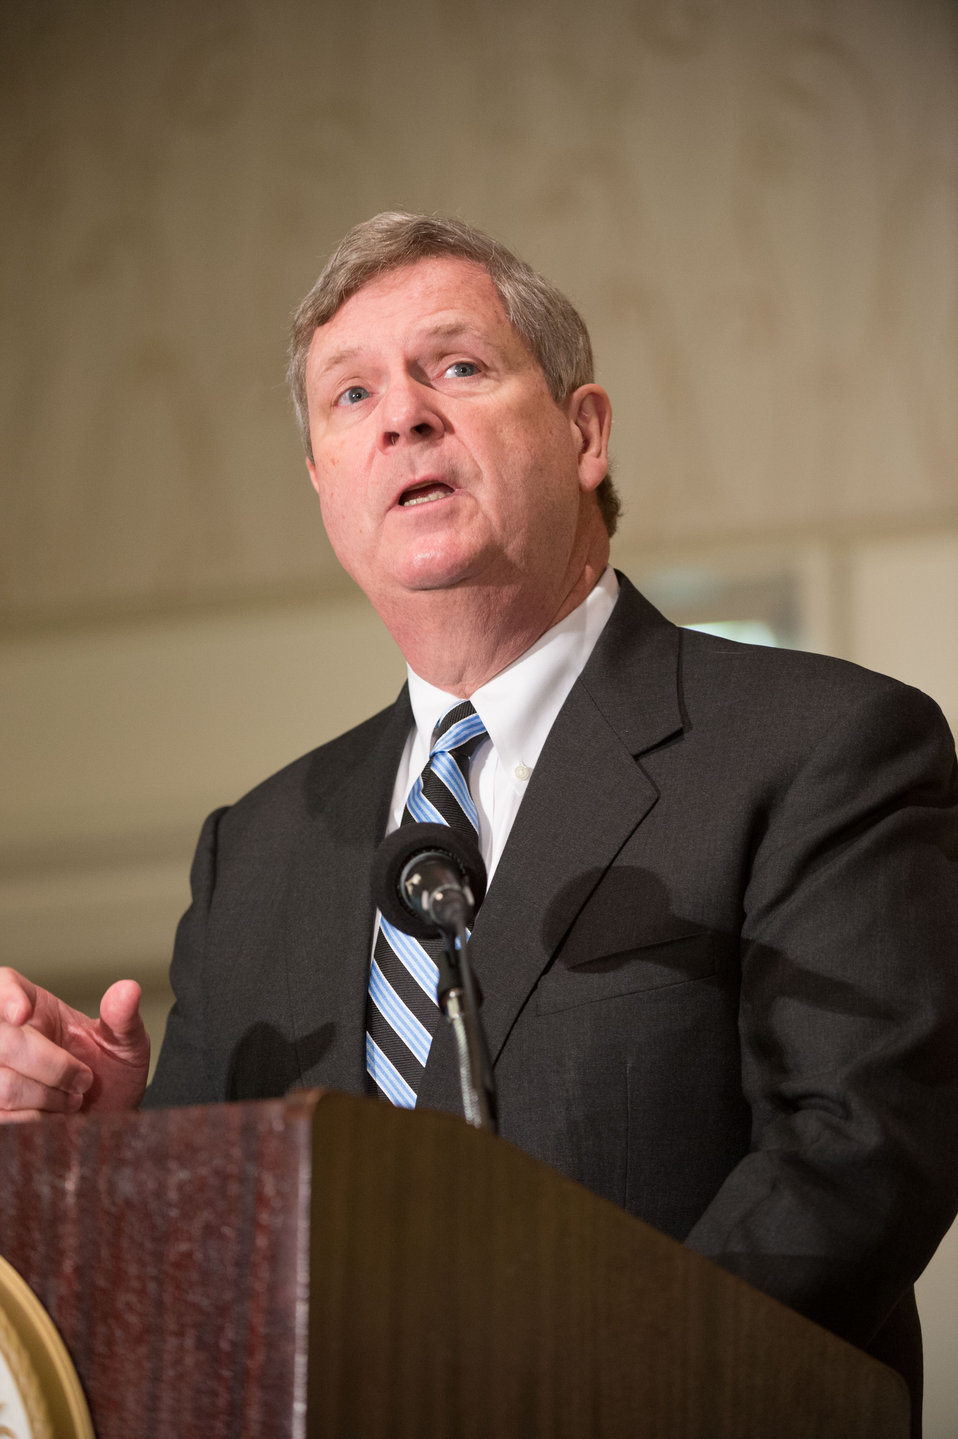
Agriculture Secretary Tom Vilsack makes remarks at the 2014 Agricultural Outlook Conference on Thursday, Feb. 20, 2014 in Arlington, VA. The U.S. Department of Agriculture's (USDA) annual Agricultural Outlook Forum brings together the agricultural community to discuss policy, trade, science, rural development, and the economic outlook for the coming year. The Forum also focuses on forestry, health and nutrition issues, and the changing dynamics and face of rural America.